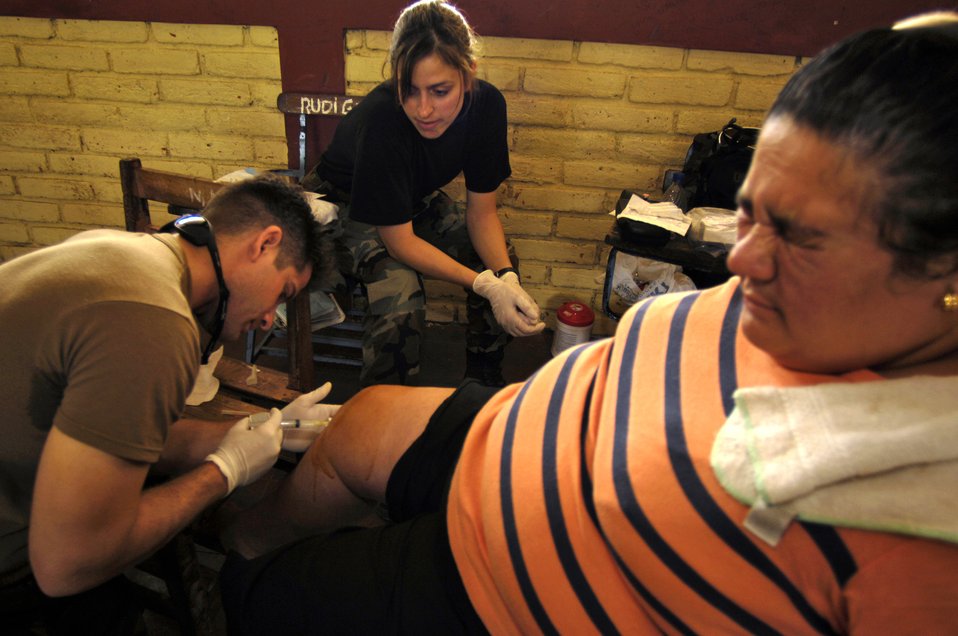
Airmen complete Nicaraguan medical exercise

Captains Derrick Darnsteadt and Francesca Lane inject medicine into a woman's knee while participating in Medical Readiness Training Exercises in Santa Teresa Feb. 26 during New Horizons - Nicaragua 2007. The $7.25 million joint U.S. and Nicaraguan military humanitarian and training exercise, provides a new school and medical clinic, as well as free health and veterinary care, giving aid and strengthening bonds between the two nations. The captains are from the 9th Medical Group at Beale Air Force Base, Calif.